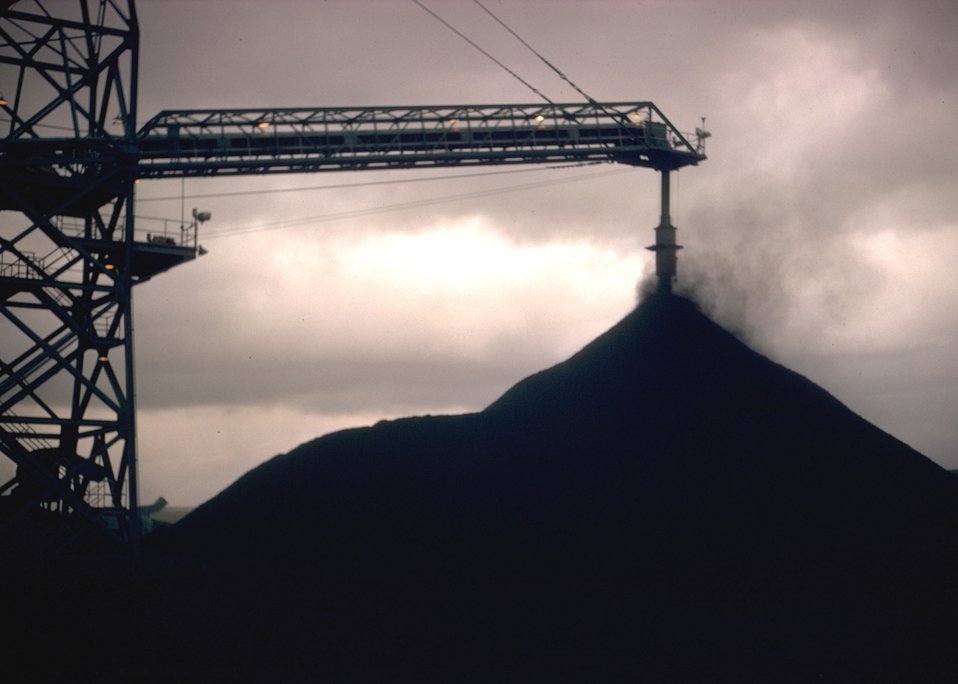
Coal bed methane development.